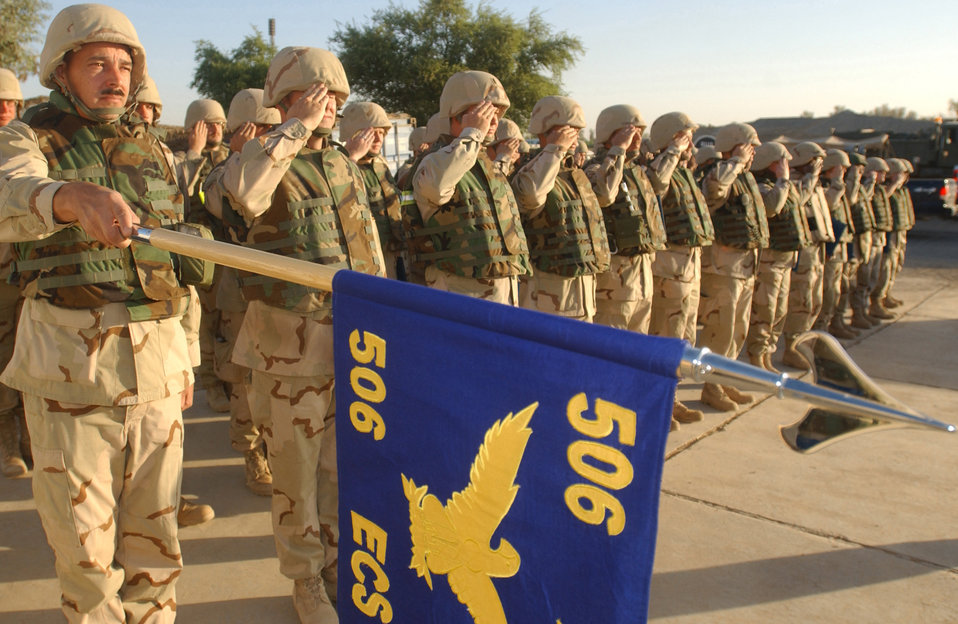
Present arms

KIRKUK AIR BASE, Iraq -- Master Sgt. Lawrence Paquette presents the 506th Expeditionary Communications Squadron guidon during the raising of the U.S. Flag here Sept. 13. The flag is raised and lowered every Monday morning at the 506 ECS work compound before their weekly awards presentations.